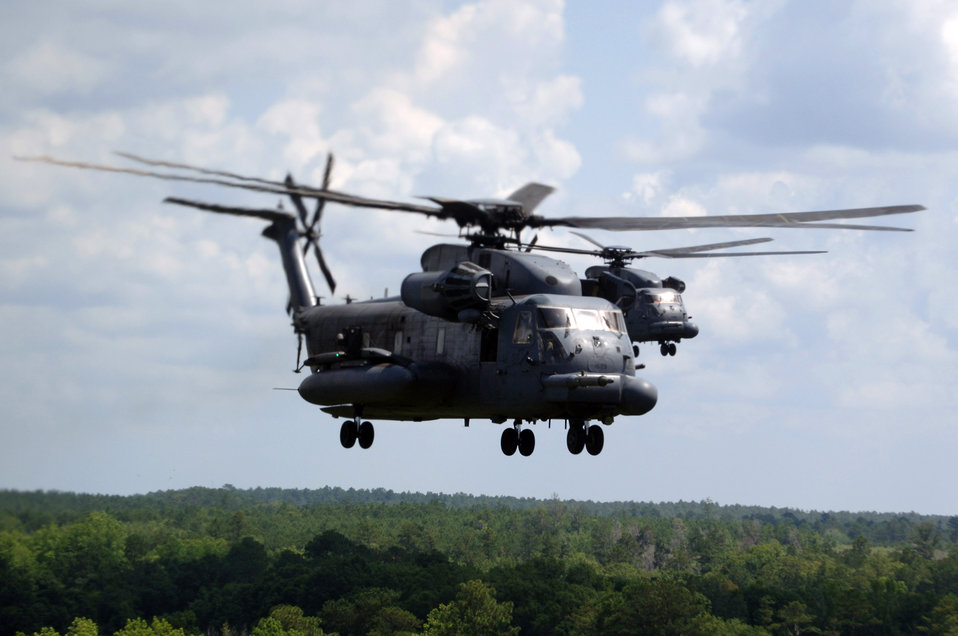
Fly high, pave low

MH-53 Pave Low helicopters from the 20th Special Operations Squadron at Hurlburt Field, Fla., fly over a live-fire range June 12 at Eglin Air Force Base, Fla. The Pave Low's mission is low-level, long-range, undetected penetration into denied areas, day or night, in adverse weather, for infiltration, exfiltration and resupply of special operations forces.